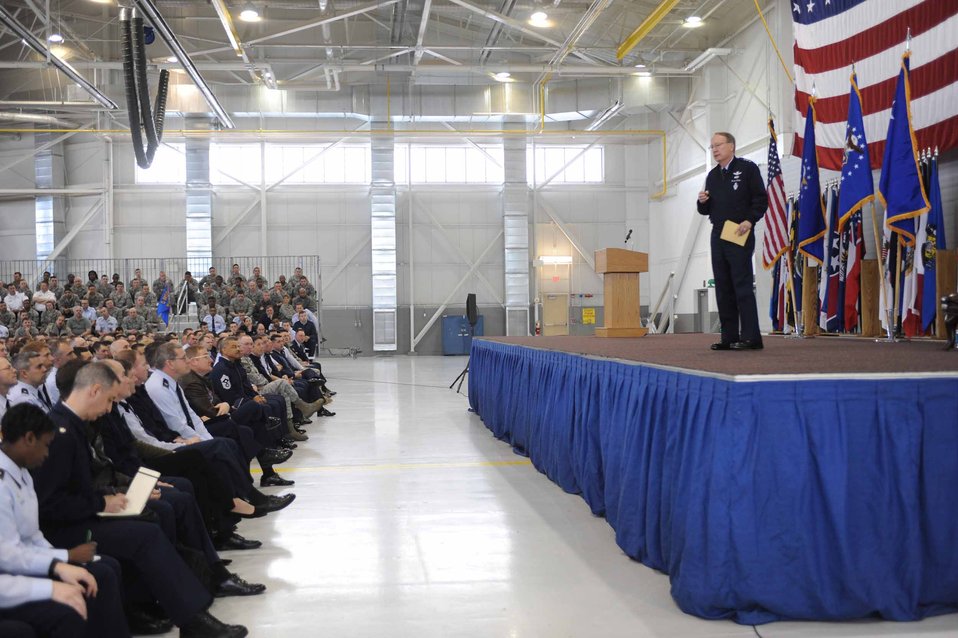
AFGSC assumes bomber responsibility

Lt. Gen. Frank G. Klotz, commander of Air Force Global Strike Command, addresses
the men and women of the 5th Bomb Wing at Minot Air Force Base, N.D., during his commander's call Feb. 1. General Klotz met with installation leaders,
community leaders and Airmen during visits to Minot; Barksdale AFB, La.; and
Whiteman AFB, Mo.; as AFGSC assumed responsibility for all long-range,
nuclear-capable bombers. The general commemorated the occasion by visiting
each unit, in three different states, on the same day.